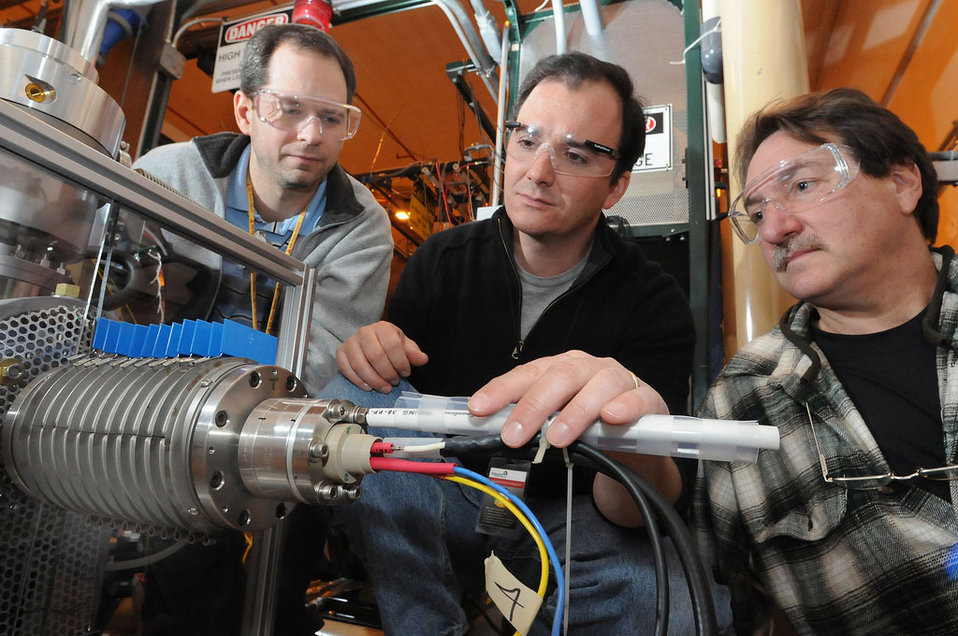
ARGONNE NATIONAL LABORATORY SCIENTISTS INSPECT THE SURFACE IONIZATION SOURCE, WHICH PROVIDES STABLE BEAMS TO THE CHARGE BREEDER AT THE ARGONNE TANDEM-LINAC ACCELERATOR SYSTEM (ATLAS).